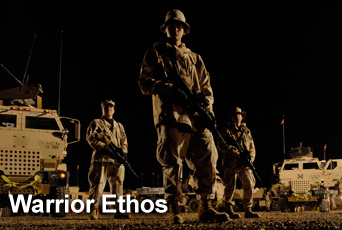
Air Force fosters

The warrior ethos is the foundation of what it means to be an Airman. It is a hardiness of spirit, and moral and physical courage.